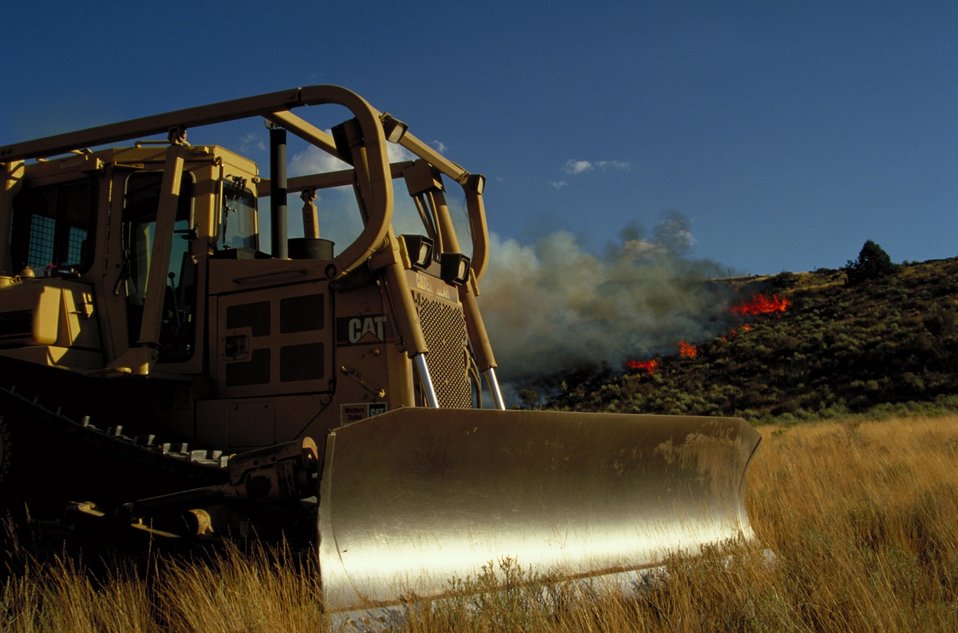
Dozer making fire line Fire Season 2000 Lower Snake River District LSRD